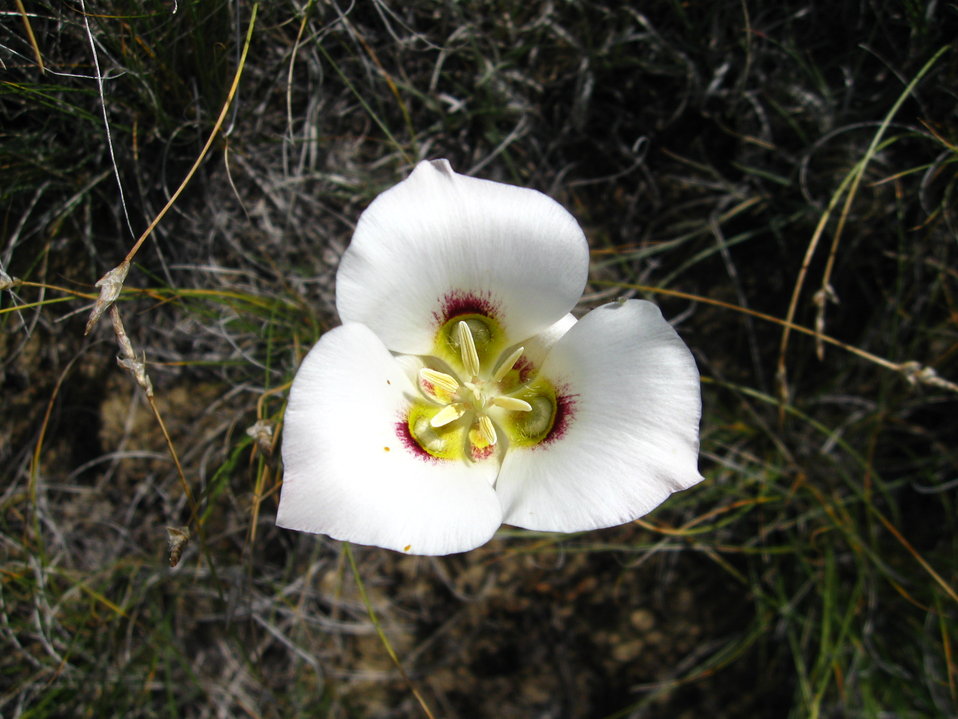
Sego Lily

This beautiful flower is also known as mariposa lily and is found in dry, mixed prairies and badlands.